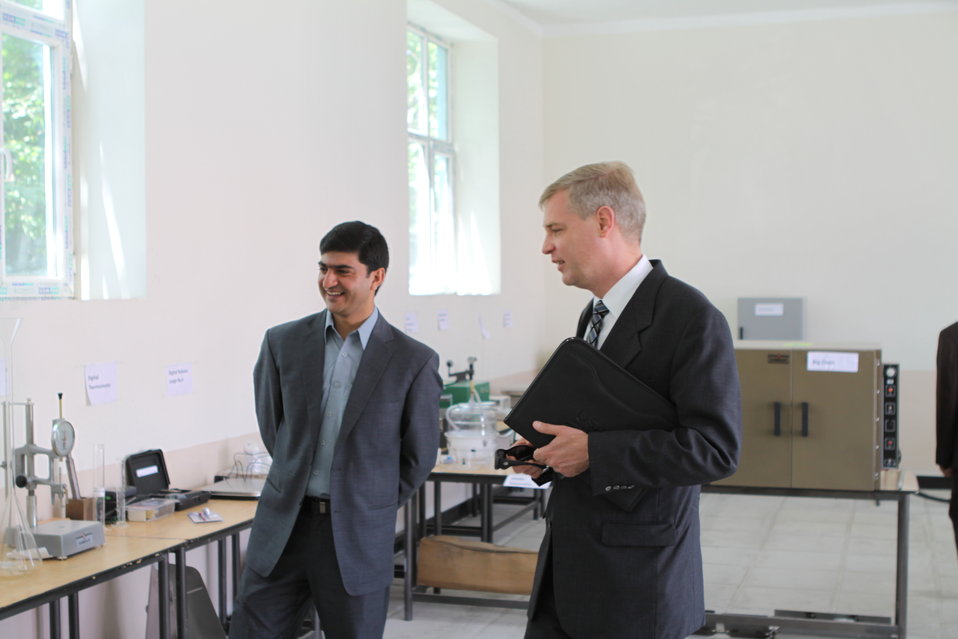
100522 ATVI Graduation 005